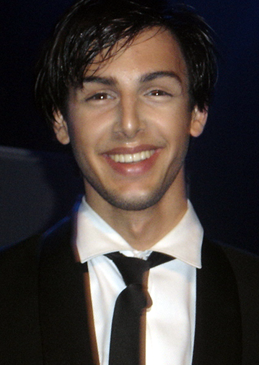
Darinconcert